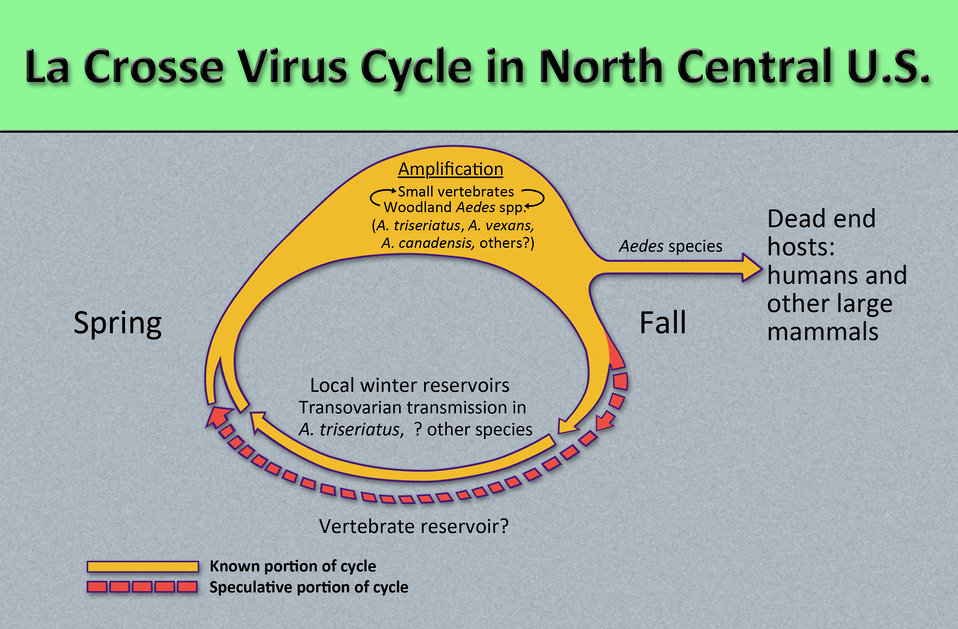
This diagram illustrates the methods by which the arbovirus, La Crosse encephalitis virus (LACV) reproduces and amplifies itself in the avian populations, and is subsequently transmitted to dead end hosts including humans and other larger mammals predominantly by the Aedes species mosquitoes.